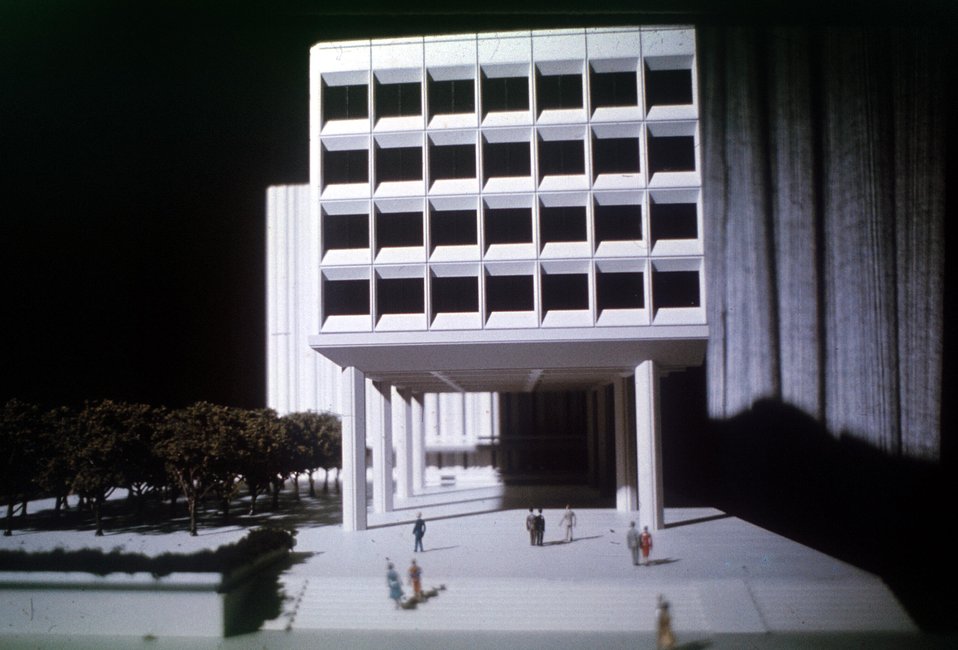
Federal Office building No. 5 Washington DC